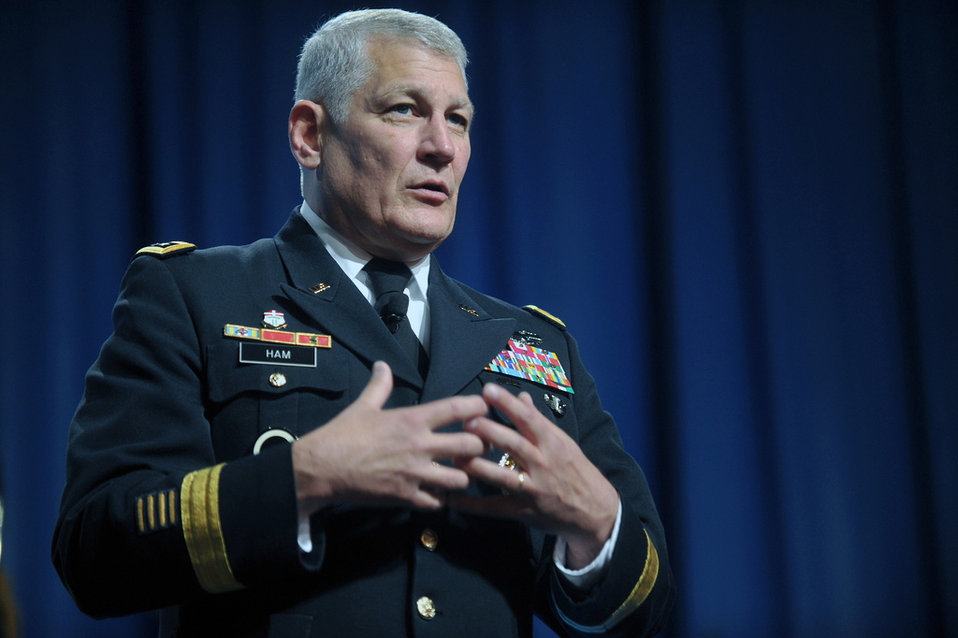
U.S. Africa Command

Army Gen. Carter Ham, combatant commander, U.S. Africa Command, addresses the 134th National Guard Association of the United States General Conference in Reno, Nev., on Sept. 10, 2012.